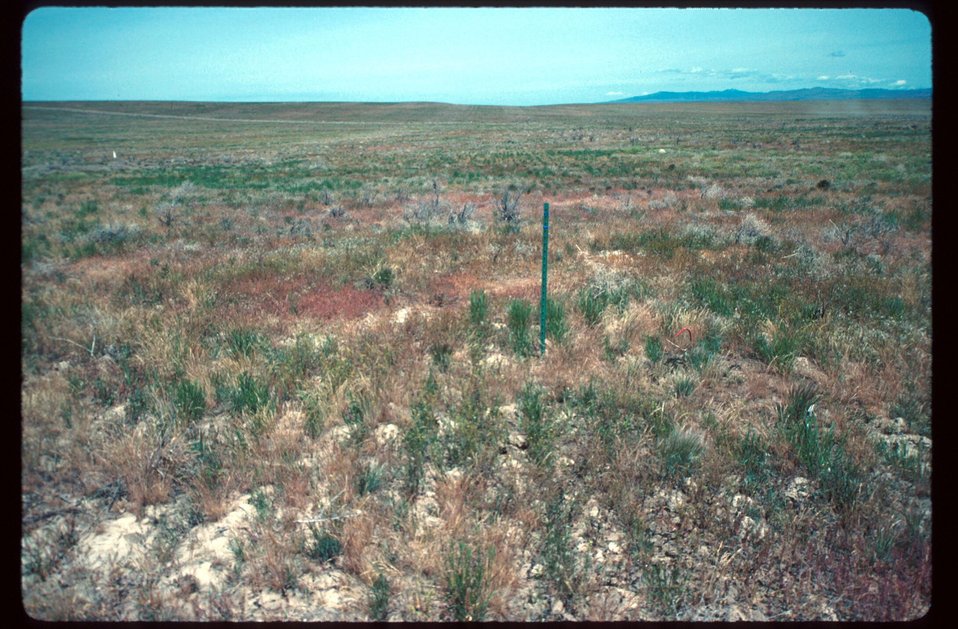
Range Restoration Project